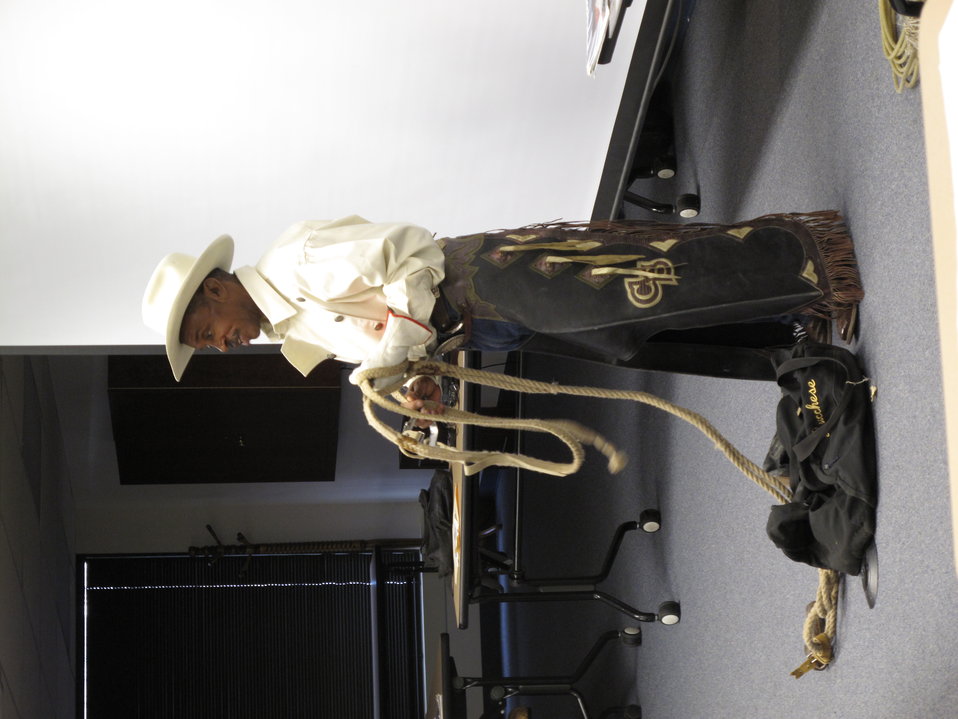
Charles Sampson in full bull riding gear

Charles Sampson shows off all the necessary gear for bull riding.